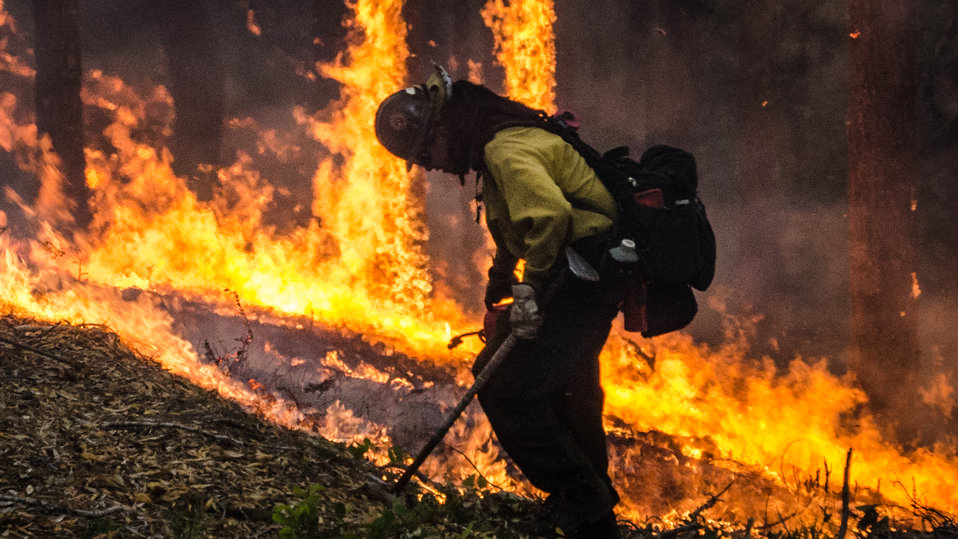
Geronimo Interagency Hotshot Crew, Department of the Interior (DOI) Indian Affairs (IA) Bureau of Indian Affairs (BIA) San Carlos Agency in Arizona; on assignment at the Big Windy Complex Wildlands Fire, approximately 15 miles west of Interstate-5 and East Northeast of Galice, Oregon, conducts a prescribed burn 'burnout' operation to help stop the main fire that may head toward this roadway, on Friday, Aug 9, 2013. The primary mission of the Interagency Hotshot Crews (IHC) is to provide a safe, organized, mobile and highly skilled hand crew for all phases of wildland fire suppression. The arduous duties and specialized assignments required of IHC personnel require uniform staffing, certification, training, equipment, communications, transportation, organization, and qualifications that adhere to interagency standards and guidelines.